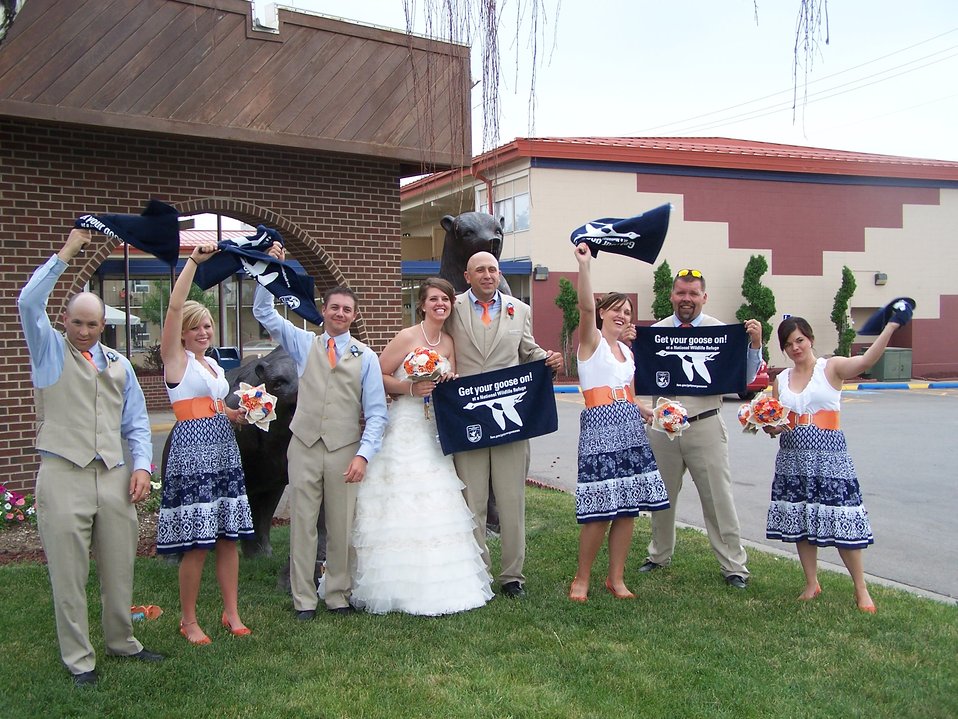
Get Your Goose On! - Holy Matrimony Style

Bowdoin National Wildlife Refuge's Fire Management Specialist, Jim Forsythe, and his Wedding Party Gets their Goose On!